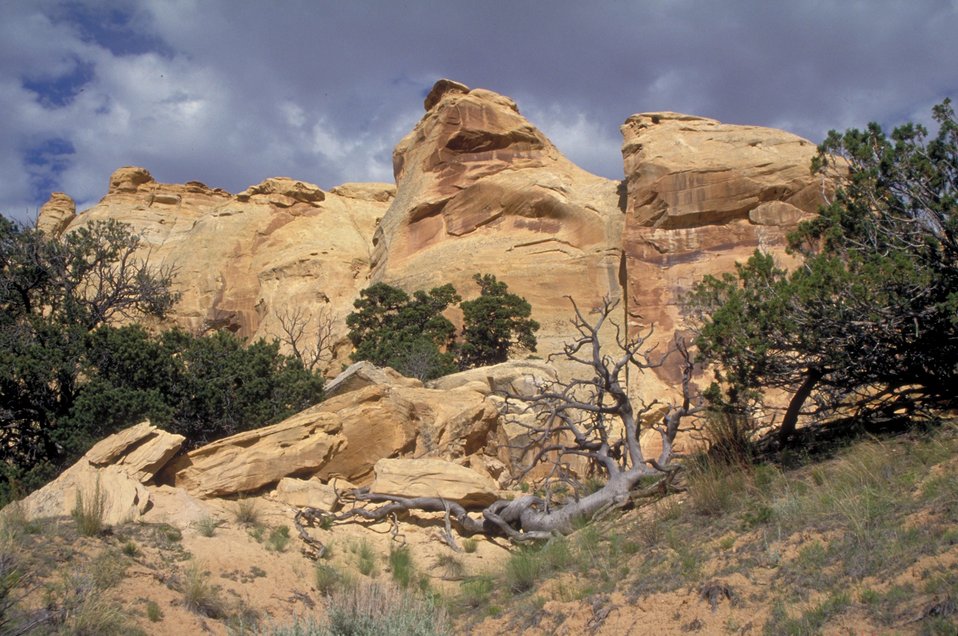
Head of Sinbad, San Rafael Swell